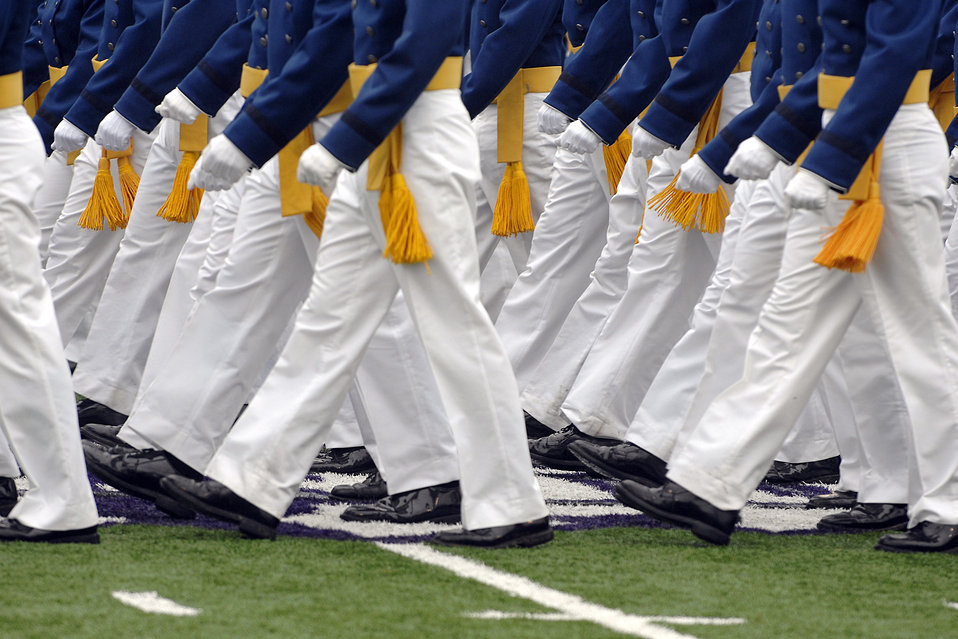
The 50th Academy class graduates

Cadets from the U.S. Air Force Academy class of 2008 march into Falcon Stadium May 28 for the graduation ceremony.